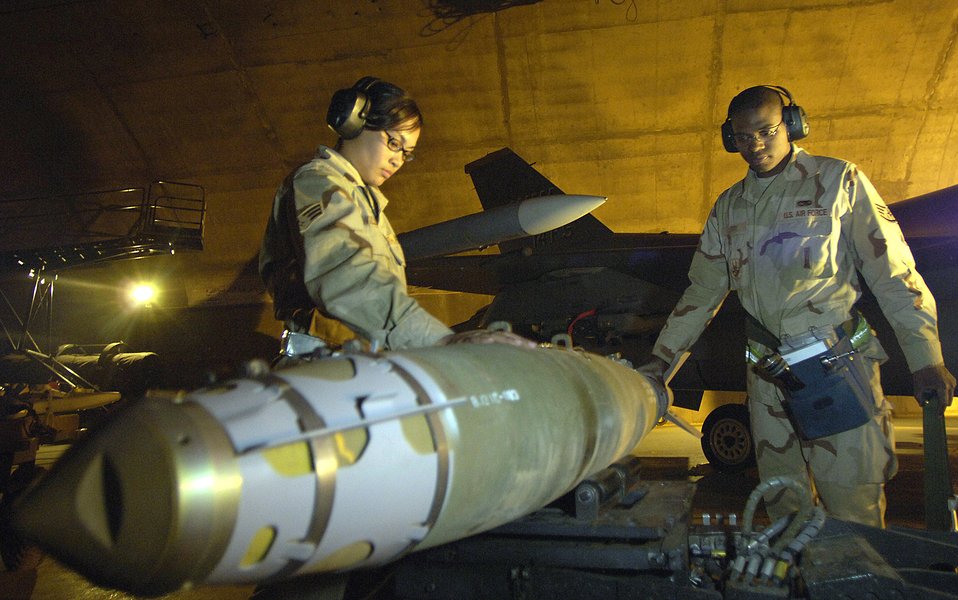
Arming the Falcons for fight

Staff Sgt. Christopher Curry and Senior Airman Roseanne Williams prepare to load munitions on an F-16 Fighting Falcon March 4 at Balad Air Base, Iraq. The Airmen are assigned to the 332nd Expeditionary Aircraft Maintenance Squadron.